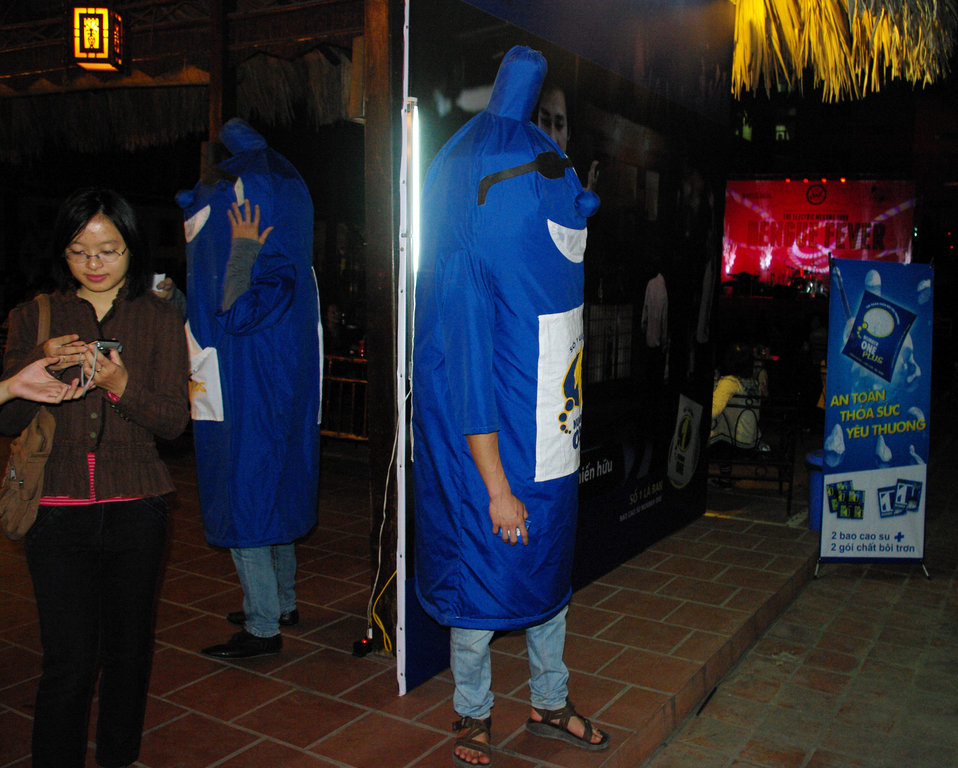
PEPFAR, U.S. Embassy Host Dengue Fever Concert in Hanoi